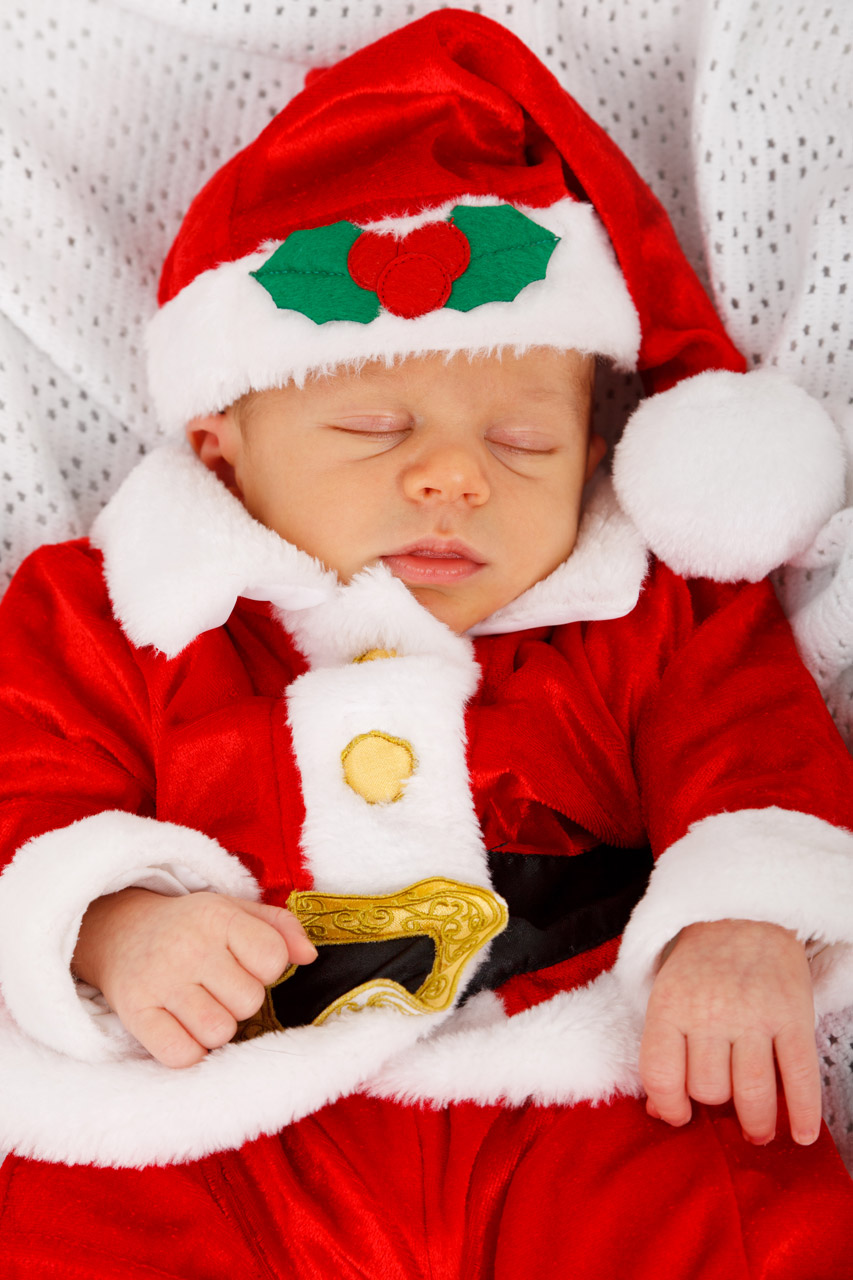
Baby santa

Adorable baby santa sleeping.